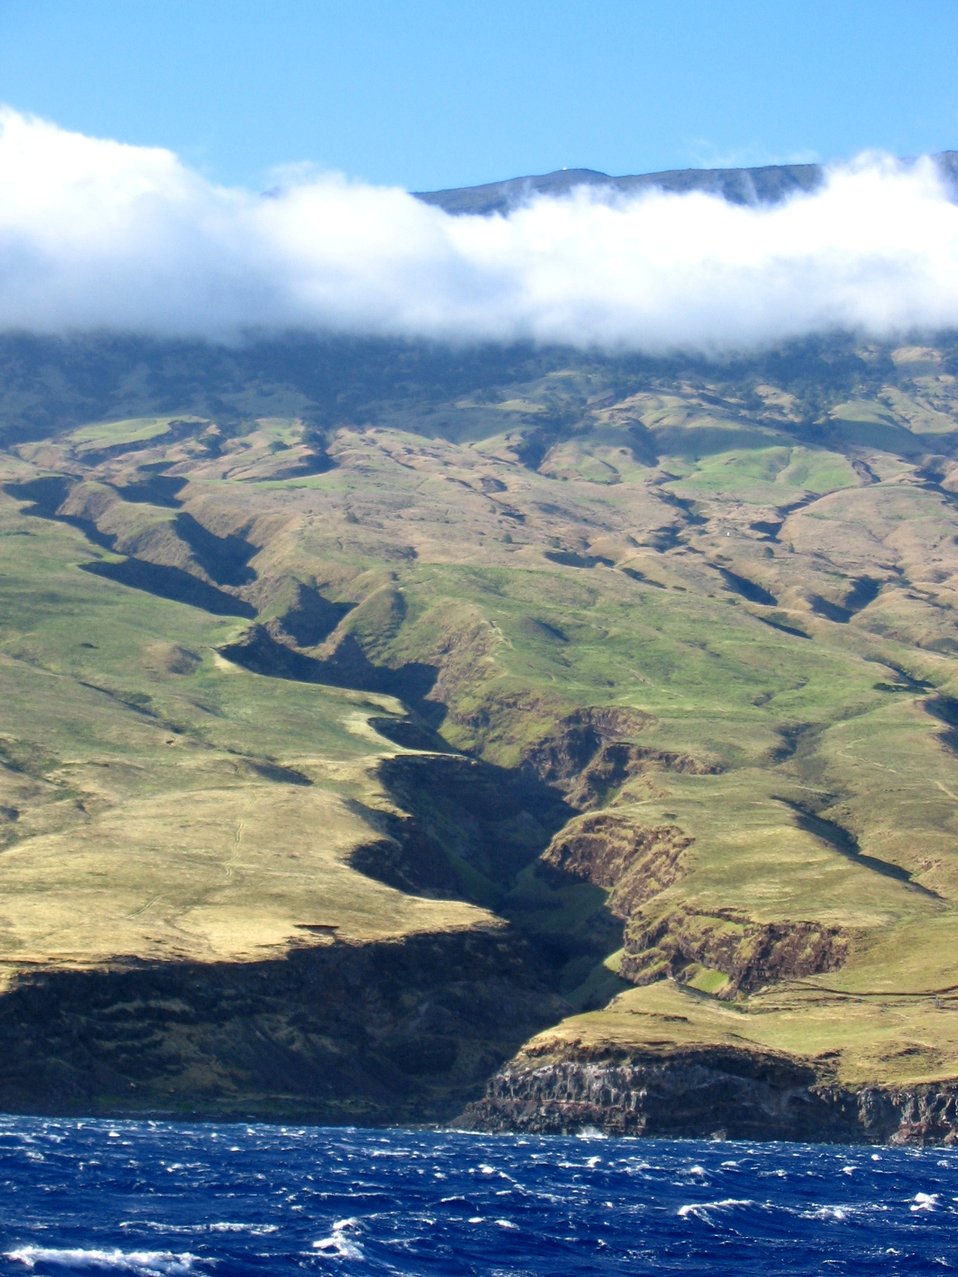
Coast of southern Maui.